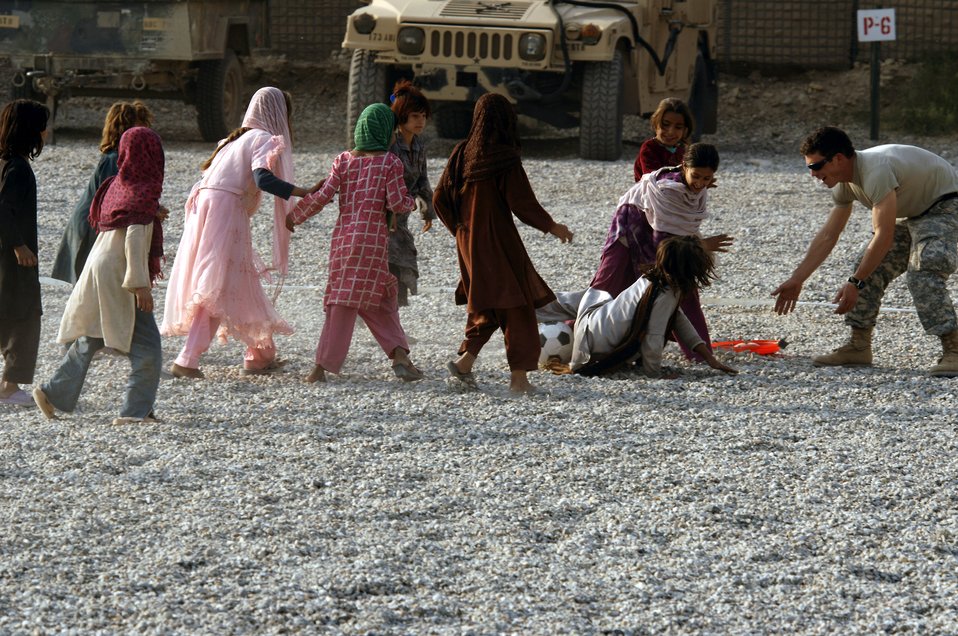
Having a ball

Army and Air Force members from the Nangarhar Provincial Reconstruction Team and Afghan children play soccer together Nov. 9 at the PRT forward operating base in Jalalabad, Afghanistan. The Nangarhar PRT is a joint team of Airmen, Soldiers and representatives from the U.S. Department of State, U.S. Agency for International Development and the U.S. Department of Agriculture. The team is responsible for helping the Islamic Republic of Afghanistan government improve security, governance and promote reconstruction in the Nangarhar Province. PRT members assess community needs and then builds schools, government centers, roads, medical capability and basic infrastructure throughout Nangarhar. Unit members also mentor Afghan government officials and security forces to provide the Afghan people with the state representation and security they need.